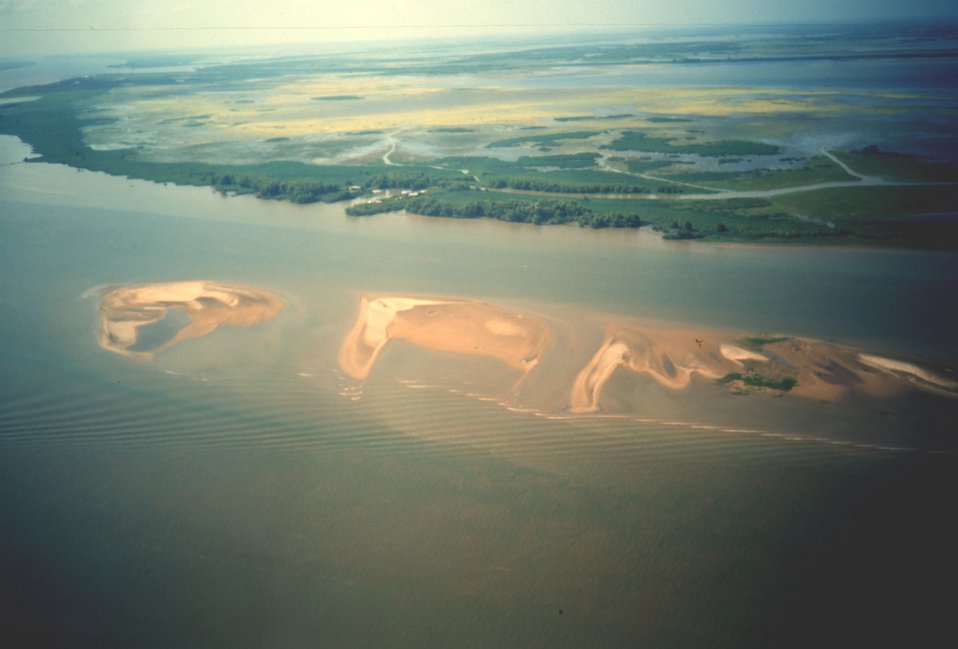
Sand bar adjacent to Pass a Loutre. Possible sediment source for restoration projects. Bar features are natural.